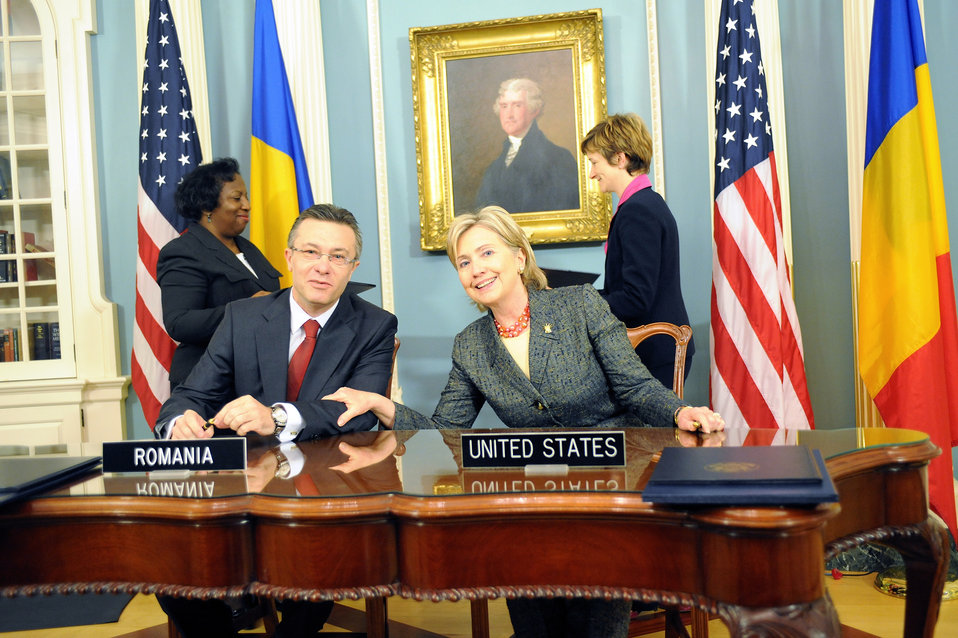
Secretary Clinton and Romanian Foreign Minister Sign Agreements

U.S. Secretary of State Hillary Rodham Clinton and Romanian Foreign Minister Cristian Diaconescu deliver remarks during a signing ceremony for the Protocols of Exchange of Instruments of Ratification for the U.S.-Romania Mutual Legal Assistance Protocol and the U.S.-Romania Extradition Treaty at the U.S. Department of State in Washington, DC May 8, 2009.